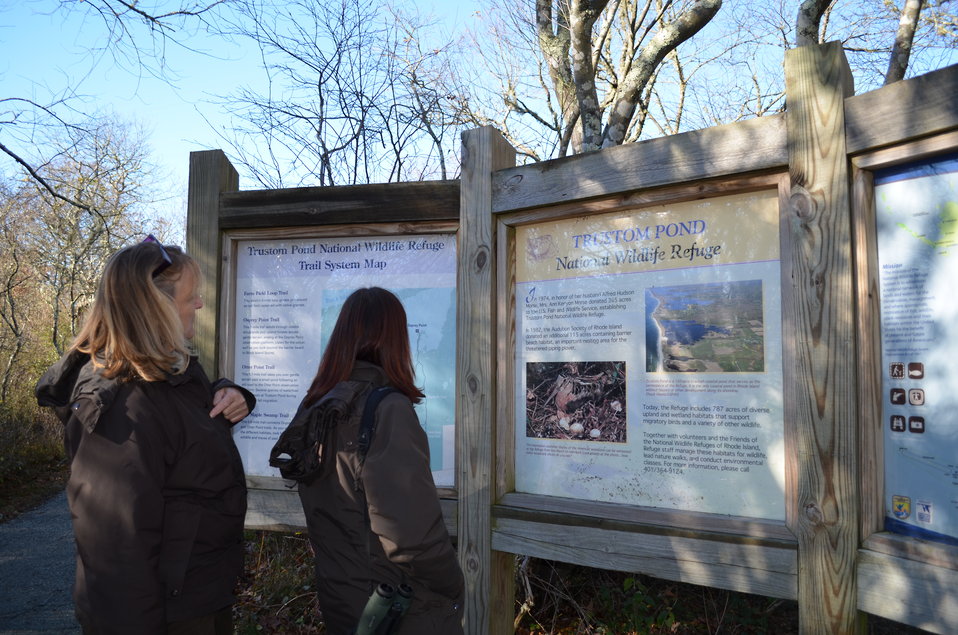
Aerial shots of Trustom Pond National Wildlife Refuge before Sandy (RI)

Rhode Island NWR complex staff Janis Nepshinsky (left) and Rhonda Smith (right) look at aerial images of Trustom Pond before Hurricane Sandy on an education display outside of the visitors station.